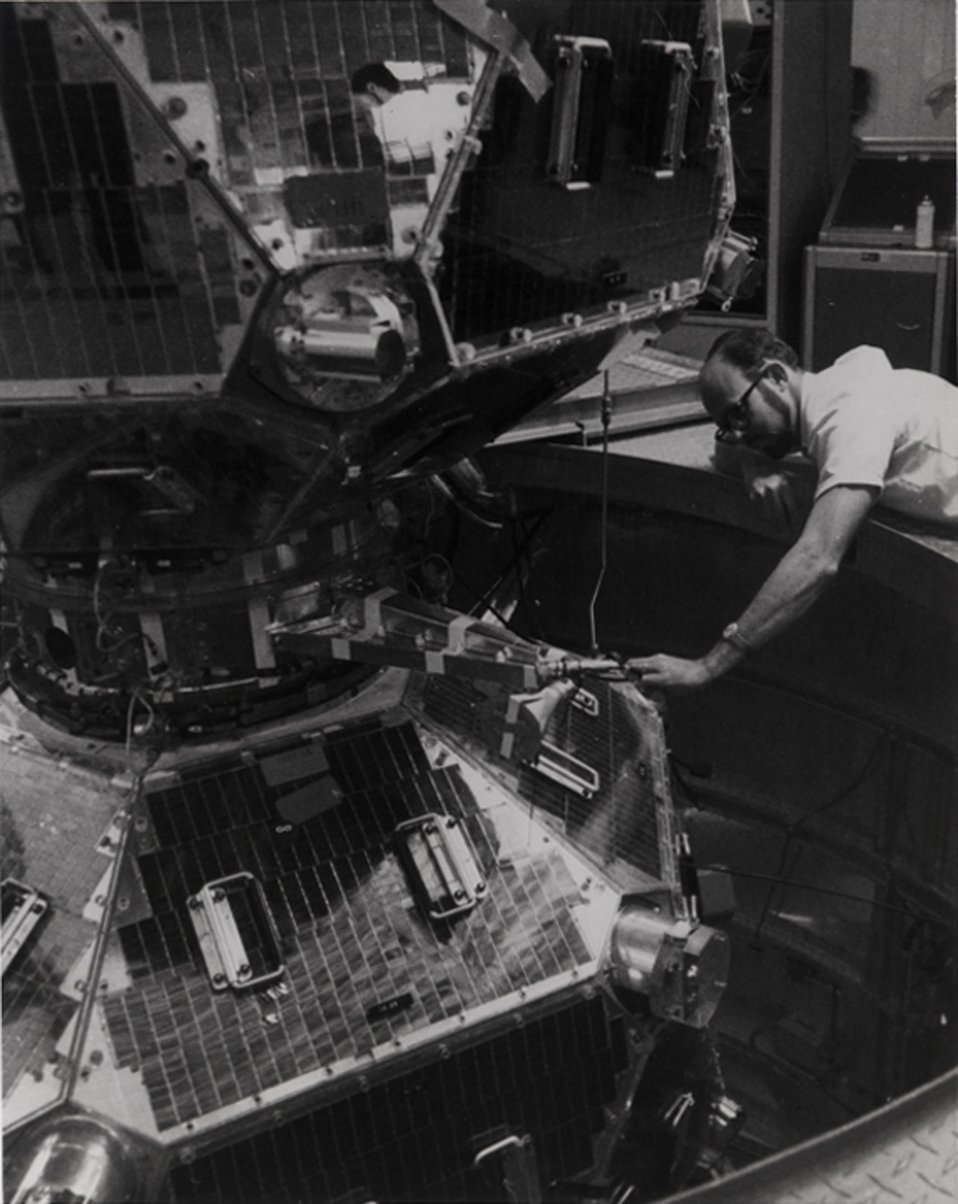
The AEC and DOD jointly conduct a research and development effort to improve the US capability to detect, locate, and identify nuclear explosions conducted in a variety of environments.